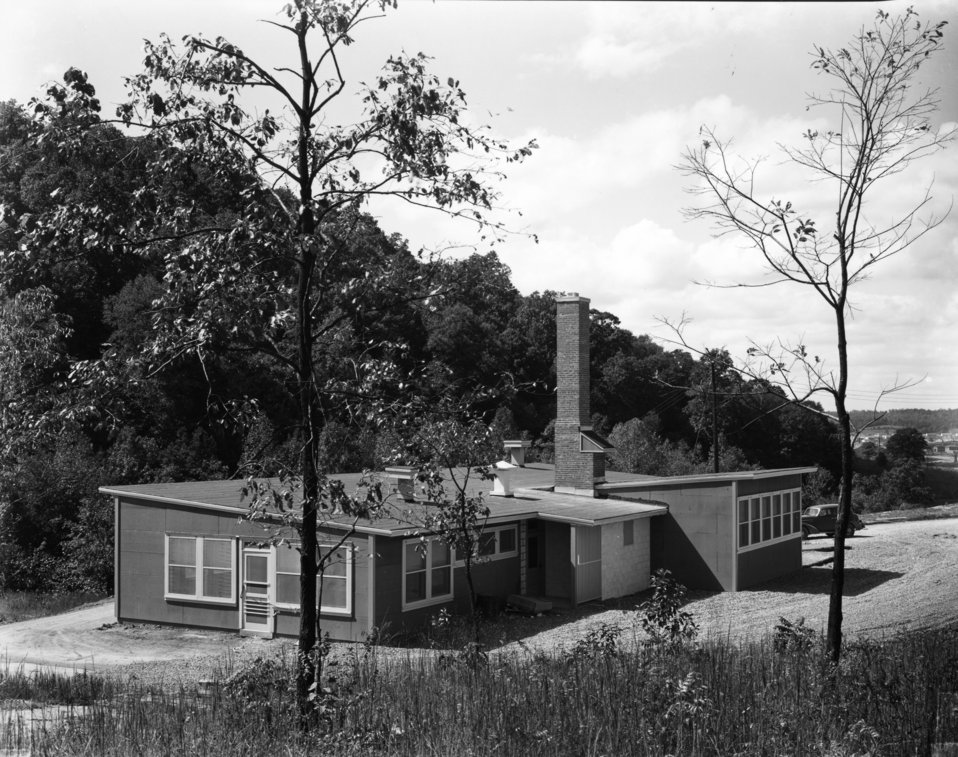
Housing at Oak Ridge